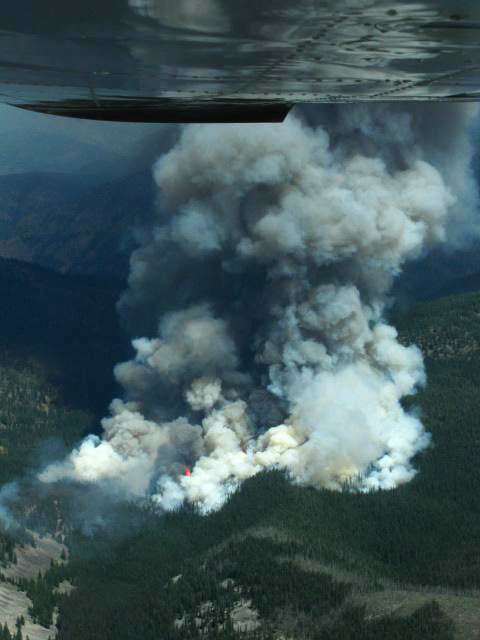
The Gold Pan Fire in the Bitterroot National Forest near Conner, MT began by lightning on Jul. 16, 2013 by lighting have consumed approximately 16,330 acres.